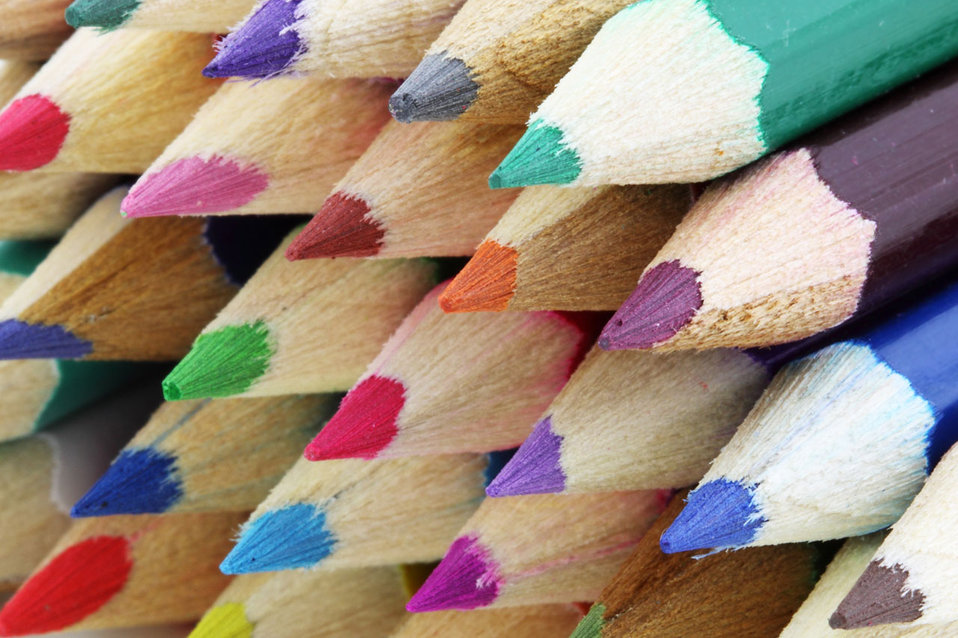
Colorful pencils pile.